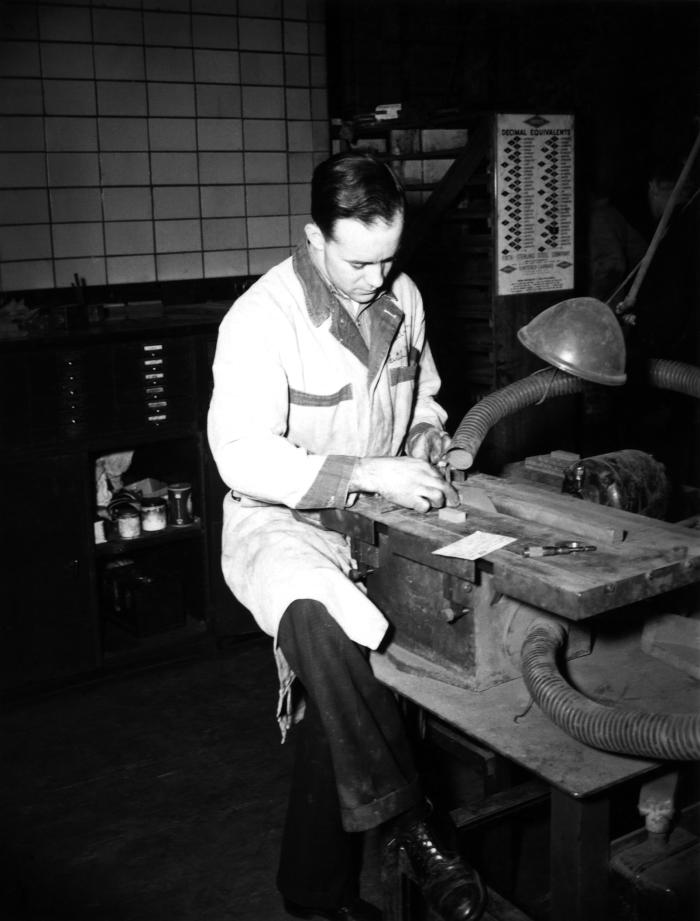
Though the man depicted in this 1946 historical photograph was seated next to a exhaust ventilation device inside a tungsten carbide (W2C) machine shop, he would have been even further protected had he been wearing a face mask filtration unit. Today's workers are warned to avoid inhalation of the very fine W2C dust; wear protective gloves to prevent skin contact; protect eyes from airborne dust contamination; avoid eating, drinking, or smoking while in the machine shop environment, which could lead to the ingestion of dust contaminants. This image was provided by the Center for Disease Control's (CDC), National Institute for Occupational Safety and Health (NIOSH).